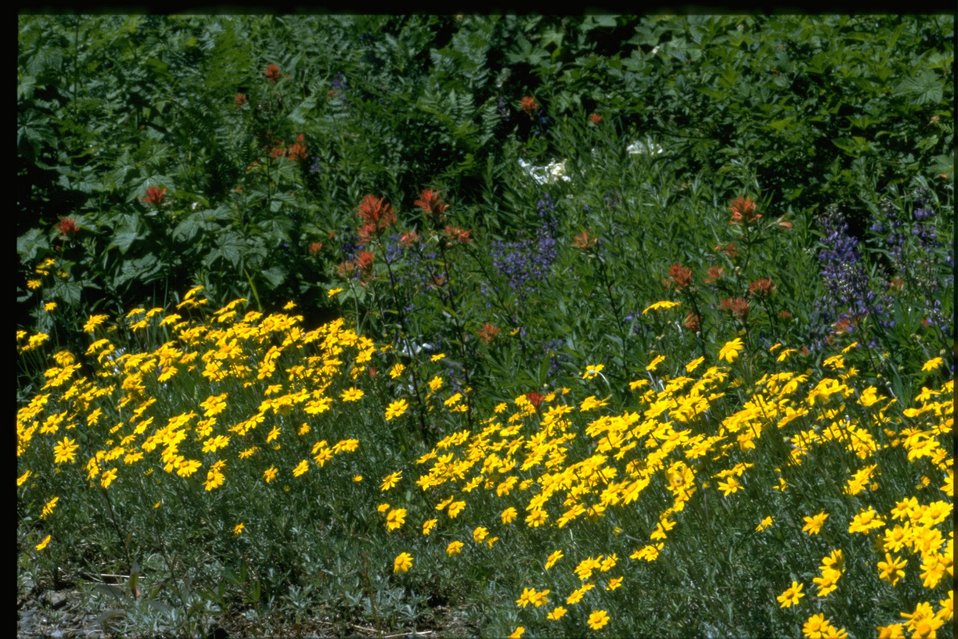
Medium shot of wildflowers (Asteraceae).